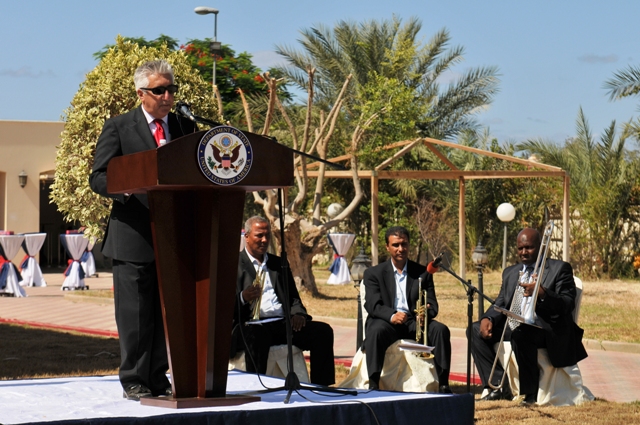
Ambassador Cretz Stands at the Podium

U.S. Ambassador to Libya Gene A. Cretz stands at the podium during a flag raising ceremony for the U.S. Embassy in Tripoli, Libya, on September 22, 2011.